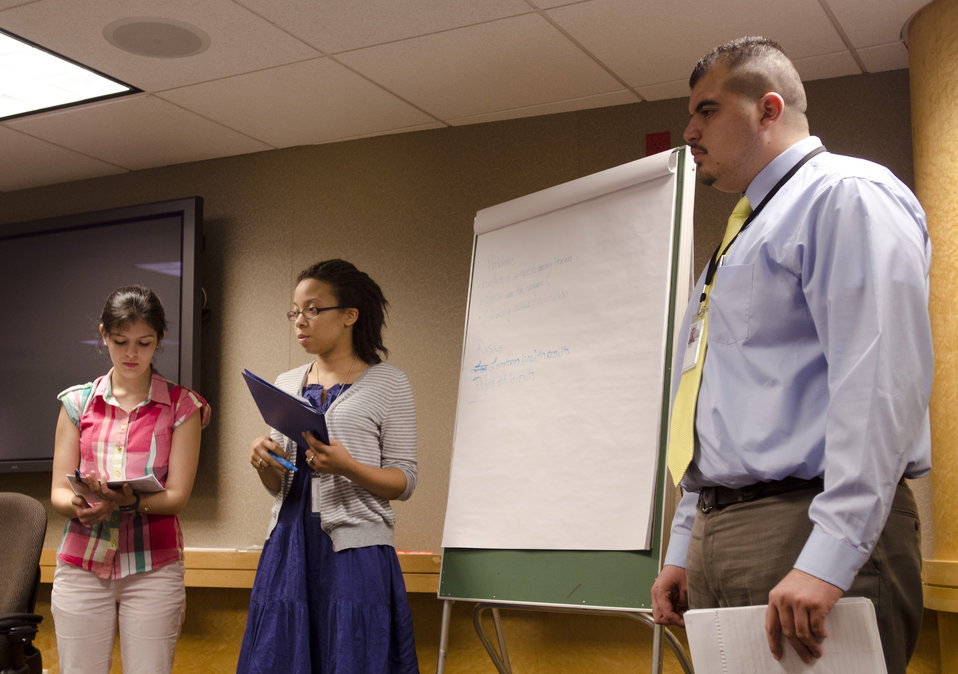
(L to R) U.S. Department of Agriculture (USDA) Food Safety Inspection Service (FSIS) intern Jessica Mitchum, USDA National Institute of Food and Agriculture (NIFA) intern Montia Medley, and USDA National Agricultural Statistic Service (NASS) intern Victor Martinez Interns present their groups findings at the USDA Internship Program Listening Session in USDA’s South Building in Washington, D.C. on Monday, August 7, 2012. The purpose of the USDA Internship Program Listening Session is to provide interns with a forum to express their views about their experiences as a USDA intern. These young people will be among the most promising future USDA leaders and participate in an individual discussion and group session that will develop leadership skills.